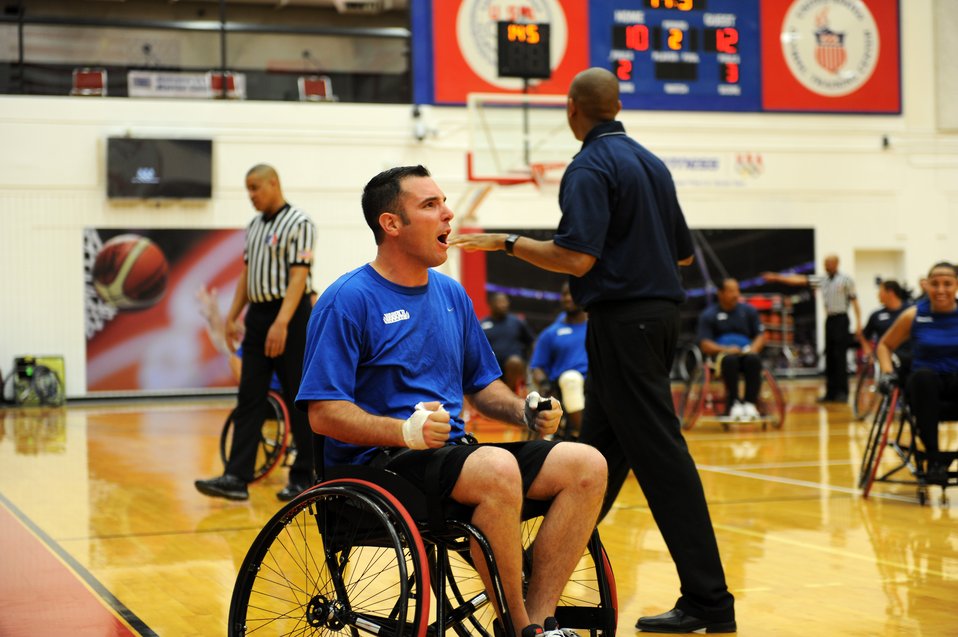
AF Basketball

Christopher D'Angelo yells after making a point in a basketball game during the Warrior Games bronze medal match against the Navy May 12, 2010 at the Olympic Training Center, Colorado Springs. The Air Force went on to win the game 13-10. The Warrior Games competition began May 10 and finishes on May 14, 2010 at the U.S. Olympic Training Center in Colorado Springs.